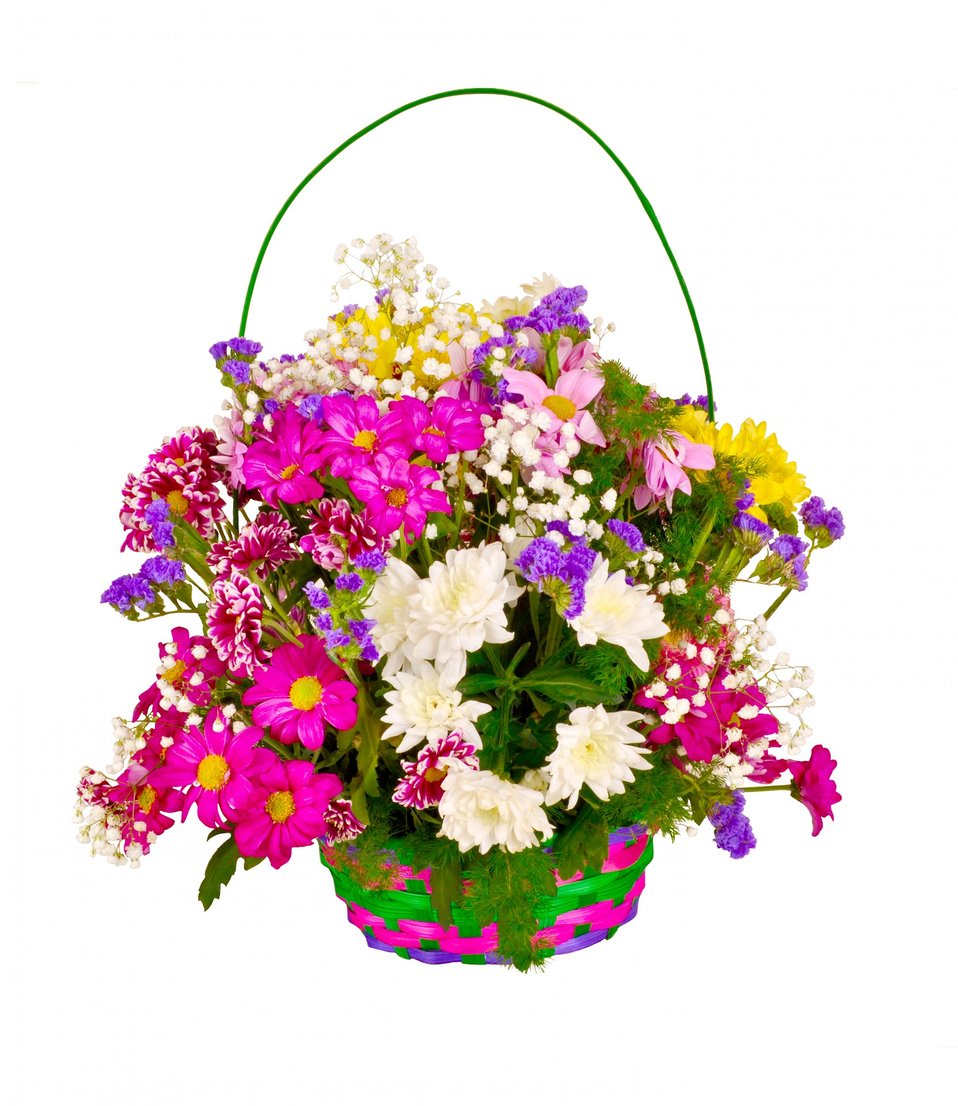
Basket of flowers on a white background.